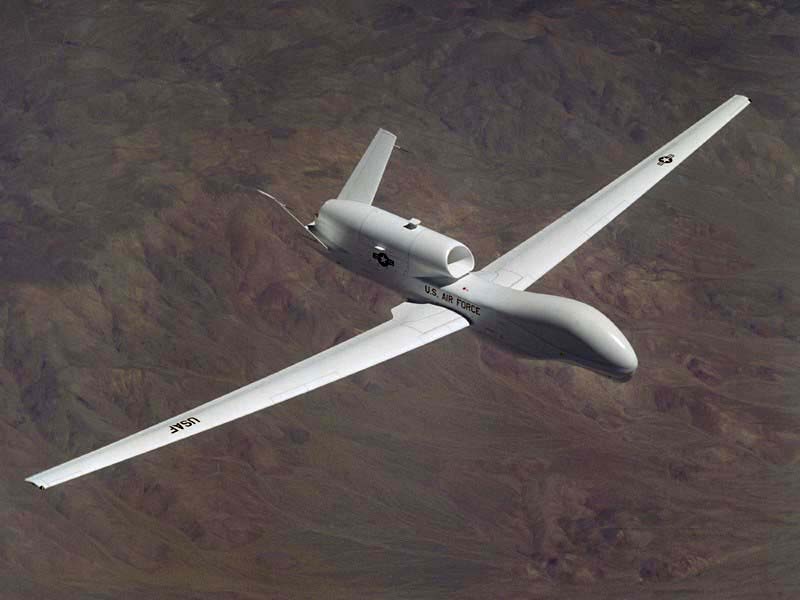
Global Hawk flight

EDWARDS AIR FORCE BASE, Calif. - The first 17 members of Air Combat Command are being trained by Edwards' testers to learn how to fly the Global Hawk unmanned aerial vehicle. Training has been ongoing here for the past few months and is projected to be complete by midsummer.